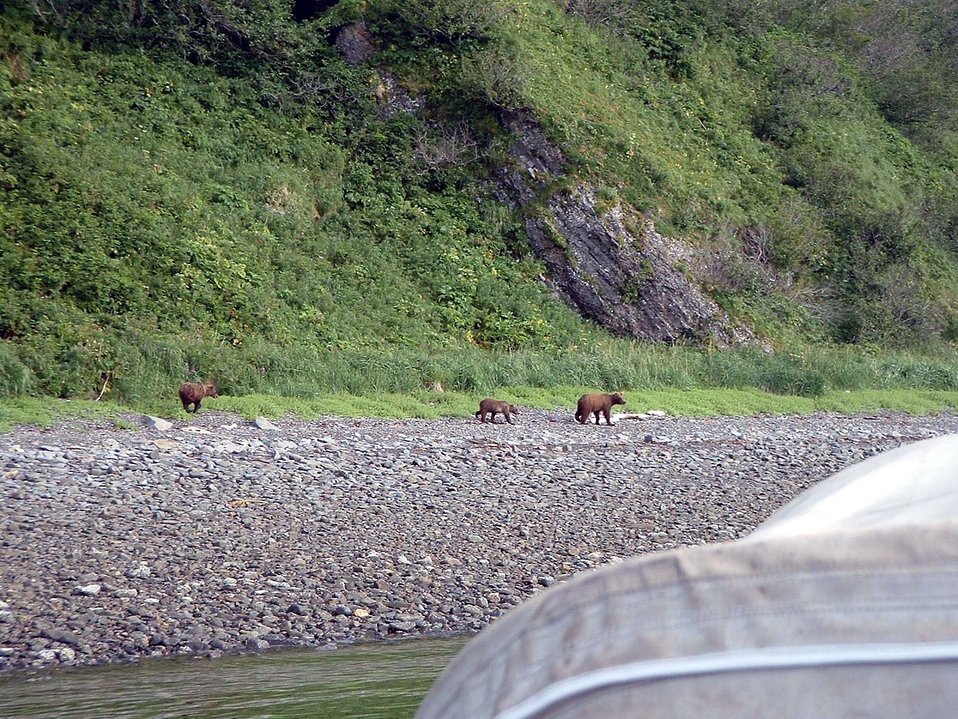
Mama bear with two cubs - Alaska brown bears - Ursus arctos.